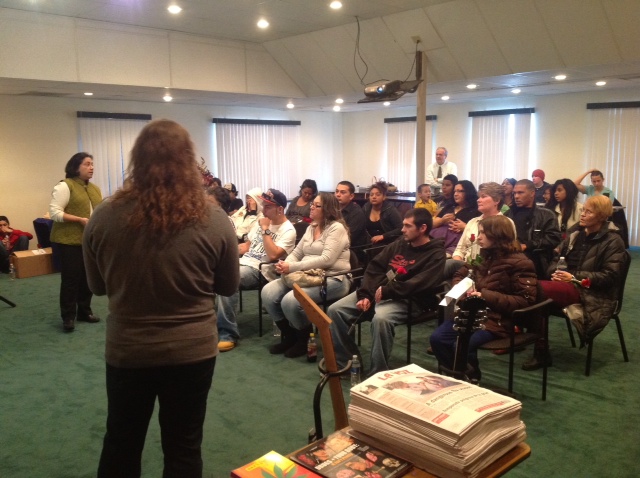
HIKE's National Drug Facts Week 2013

Lakewood, Co. Shatter The Myths Event- February 2, 2013. Speakers included Mita Johnson President of Colorado Association of Addiction Professionals and CEO Behavioral Health Resources, LLC, Thea Wessel with Women's Rise Re-Entry Clinician at Denver County Jail, Marguerite Ham from Eye of the Storm Foundation, and Francisco Cordova and Lakewood CO. Councilman Pete Roybal. Photos provided by Justine Hurtado